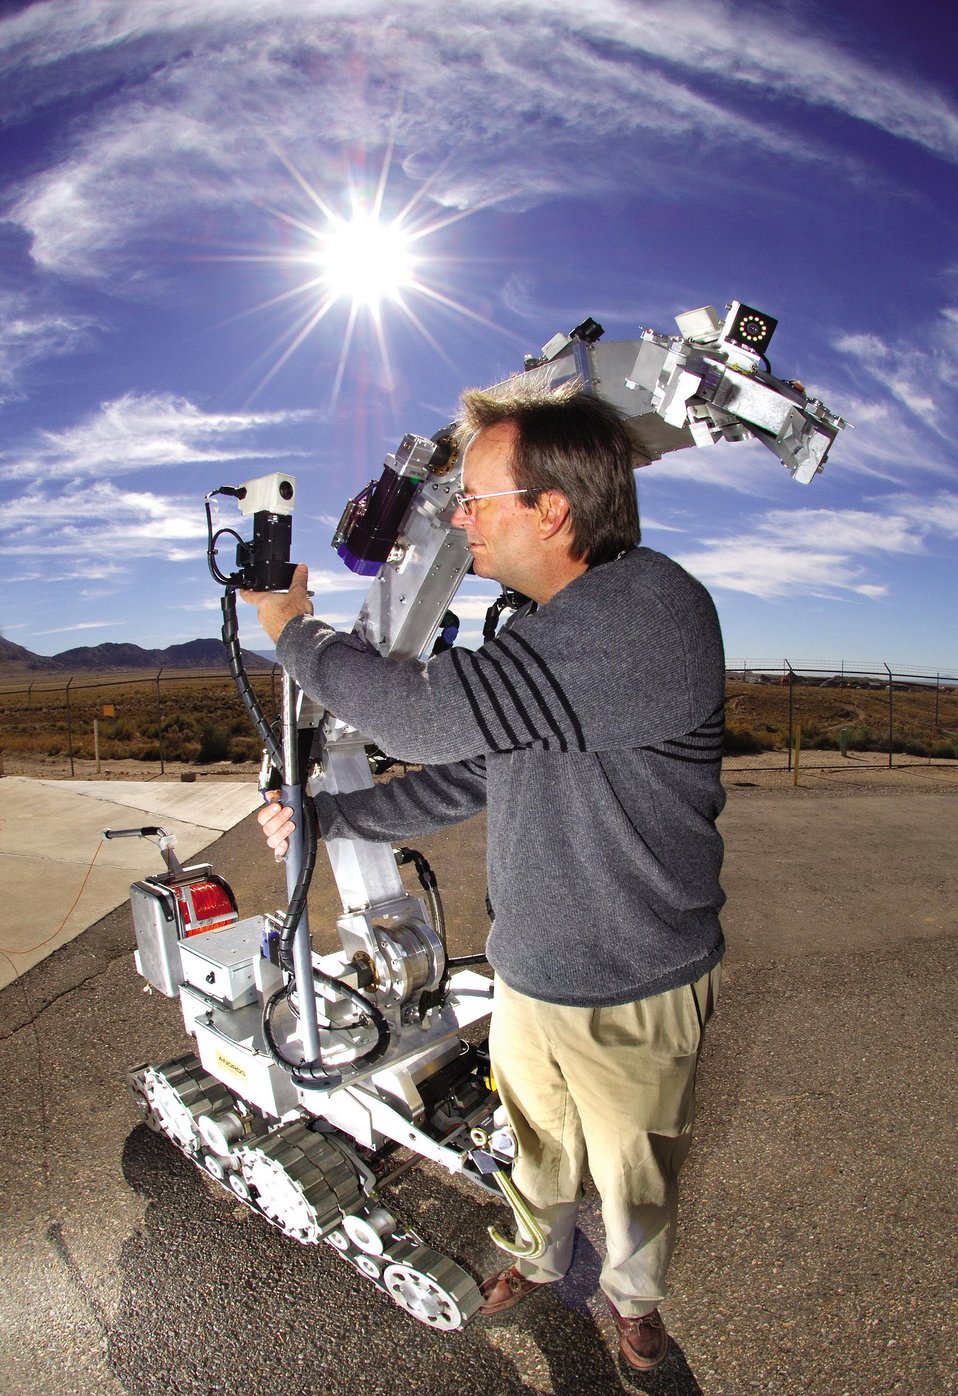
A SCIENTIST DEMONSTRATES THE CAPABILITIES OF THE ROBOT KNOW AS M2 (MIGHTY MOUSE).

THE ROBOT IS PART OF THE RADIOLOGICAL ASSISTANCE PROGRAM AT SANDIA NATIONAL LABORATORY AND COLLABORATES WITH DOD'S WHITE SANDS MISSILE RANGE GAMMA IRRADIATION FACILITY. THE FACILITY'S PURPOSE IS TO IRRADIATE ELECTRIC CIRCUIT BOARDS TO TEST THEIR SURVIVABILITY UNDER EXTREME CIRCUMSTANCES. THE ROBOT WEIGHS 600 POUNDS, FIVE FOOT LONG, ROLLS ON TREADS AND CAN MANEUVER AROUND OBSTACLES AND HAS A LONG MULTI-JOINTED GRIPPER ARM. IT HAS THE SKILL TO REACH AWKWARD PLACES AND APPLY FORCE TO DRILLS AND SCREWDRIVERS.